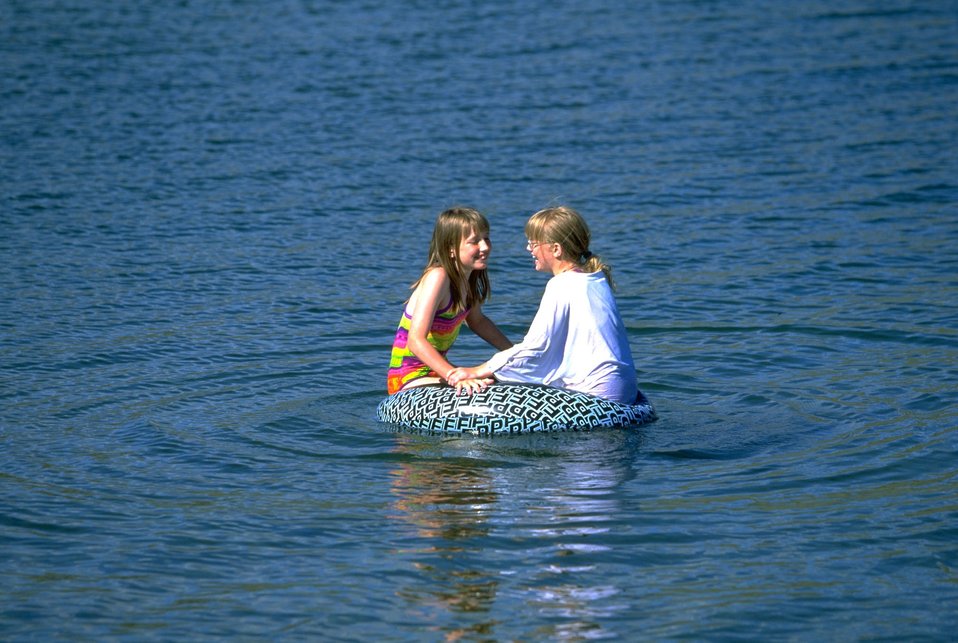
Girls playing in Hauser Lake